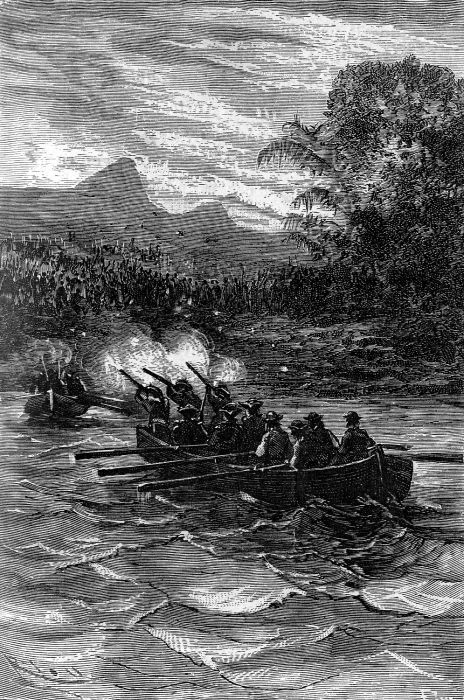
An ilustration from the novel 'In Search of the Castaways; or Captain Grant's Children' by Jules Verne drawn by Édouard Riou. Polski: Ilustracja powieści Juliusza Verne'a 'Dzieci kapitana Granta' autorstwa Édouarda Riou. Français : 'Les Enfants du capitaine Grant', Édouard Riou. Français : Aussitôt, quatre matelots, bons tireurs…